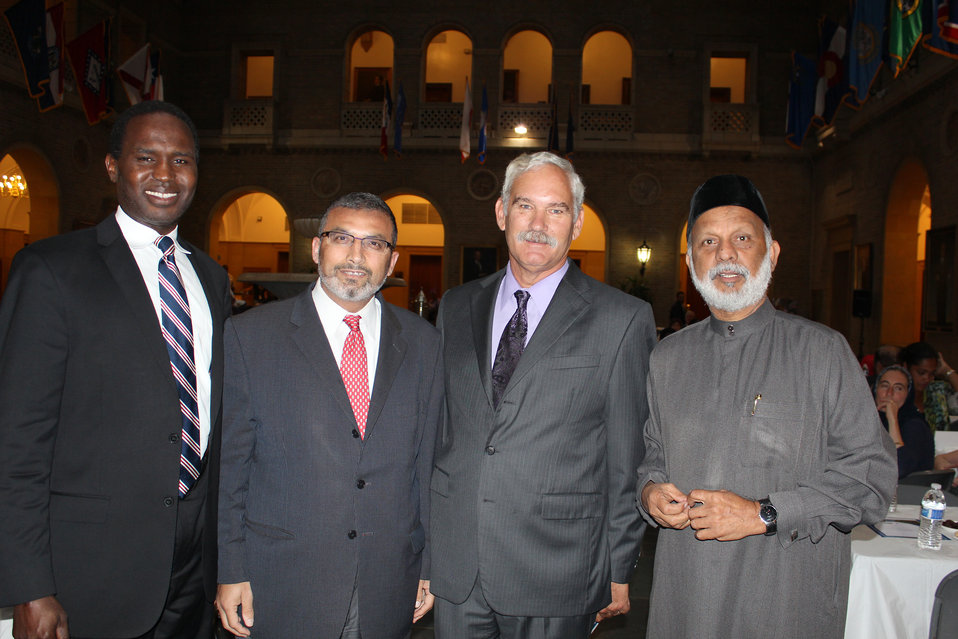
The U.S. Department of Agriculture (USDA) hosted its fifth annual Ramadan dinner on the USDA Whitten Building patio on Thursday, Aug. 1, 2013. For the second year in a row, Islamic Relief USA had the privilege of sponsoring the event’s dinner. Islamic Relief USA works with the USDA as well as numerous other organizations to help alleviate hunger. In one joint initiative with the USDA, IRUSA helps support community organizations across America that provide summer meals to low-income youth who rely on free or reduced-cost school lunches during the school year. (L to R Director of Communications and Community Outreach of the Islamic Society of North America Dr. Mohamed El-Sanousi, President of Islamic Relief USA Dr. Abed Ayoub, Acting Deputy Secretary of Agriculture Michael Scuse, and Islamic Society of the Washington Area Imam Faizul Khan)